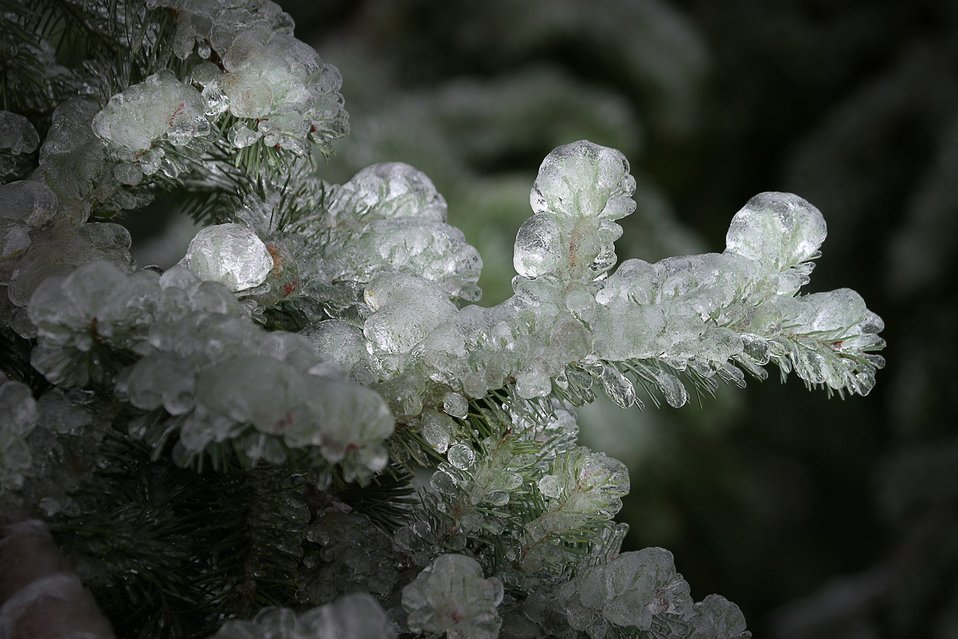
Snow and ice on Douglas Fir Bows and cones during the storm of January 2004.